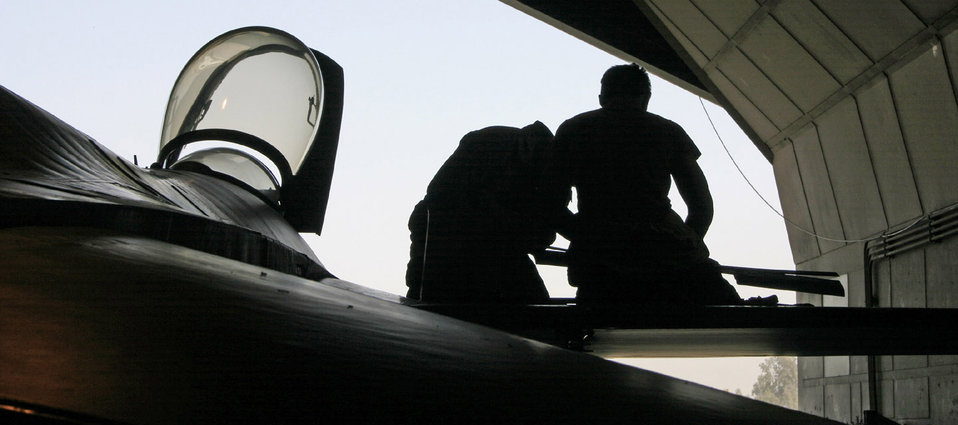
F-16 crew chiefs combat odds to keep jets in flight

BALAD AIR BASE, Iraq -- Senior Airman Shawn Justus (left) and Airman 1st Class Colin Muller prepare for an 800-hour maintenance procedure and inspection on an F-16 Fighting Falcon. They are crew chiefs with the 332nd Expeditionary Aircraft Maintenance Squadron here.